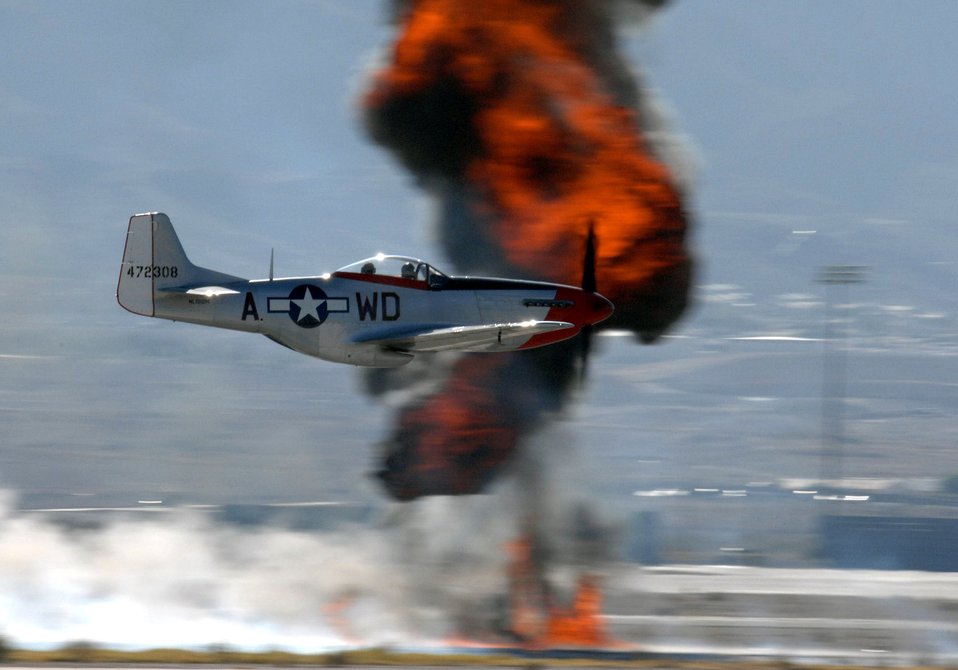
It's an aviation nation

A P-51 Mustang performs for the crowd during the Aviation Nation Air Show Nov. 10 at Nellis Air Force Base, Nev. Aviation Nation is and one of the largest air shows in North America. This year's show commemorated 60 years of airpower and was the capstone event of the Air Force's yearlong 60th anniversary celebration.